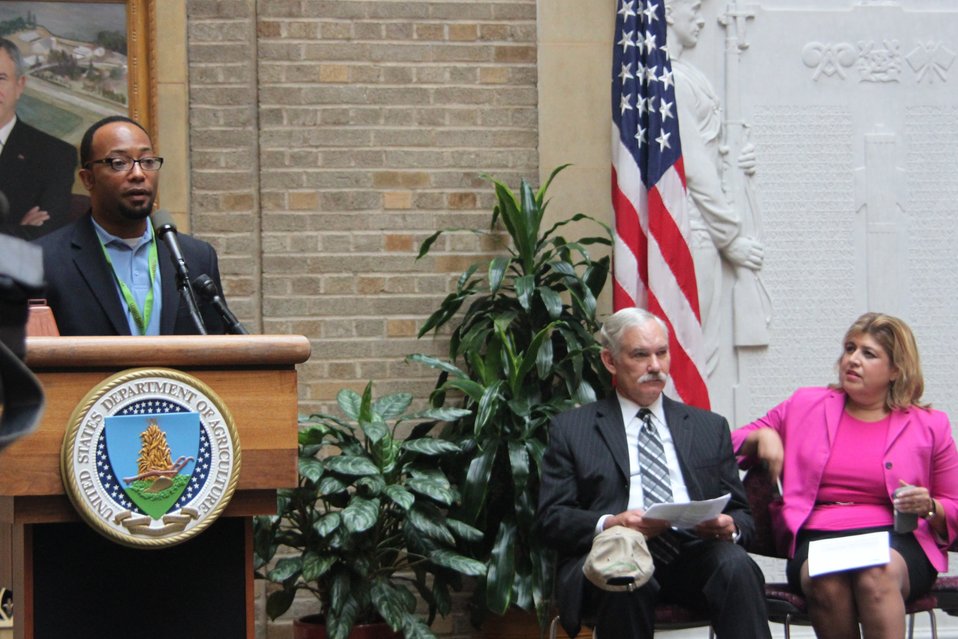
Introductions at the Farmers Market Opening

U.S. Department of Agriculture (USDA) Agricultural Marketing Service (AMS) Deputy Administrator Arthur Neal introduces Agriculture Acting Deputy Secretary Michael Scuse and AMS Administrator Anne Alonzo at USDA's Farmers Market opening ceremony on Friday, Jun. 7, 2013.